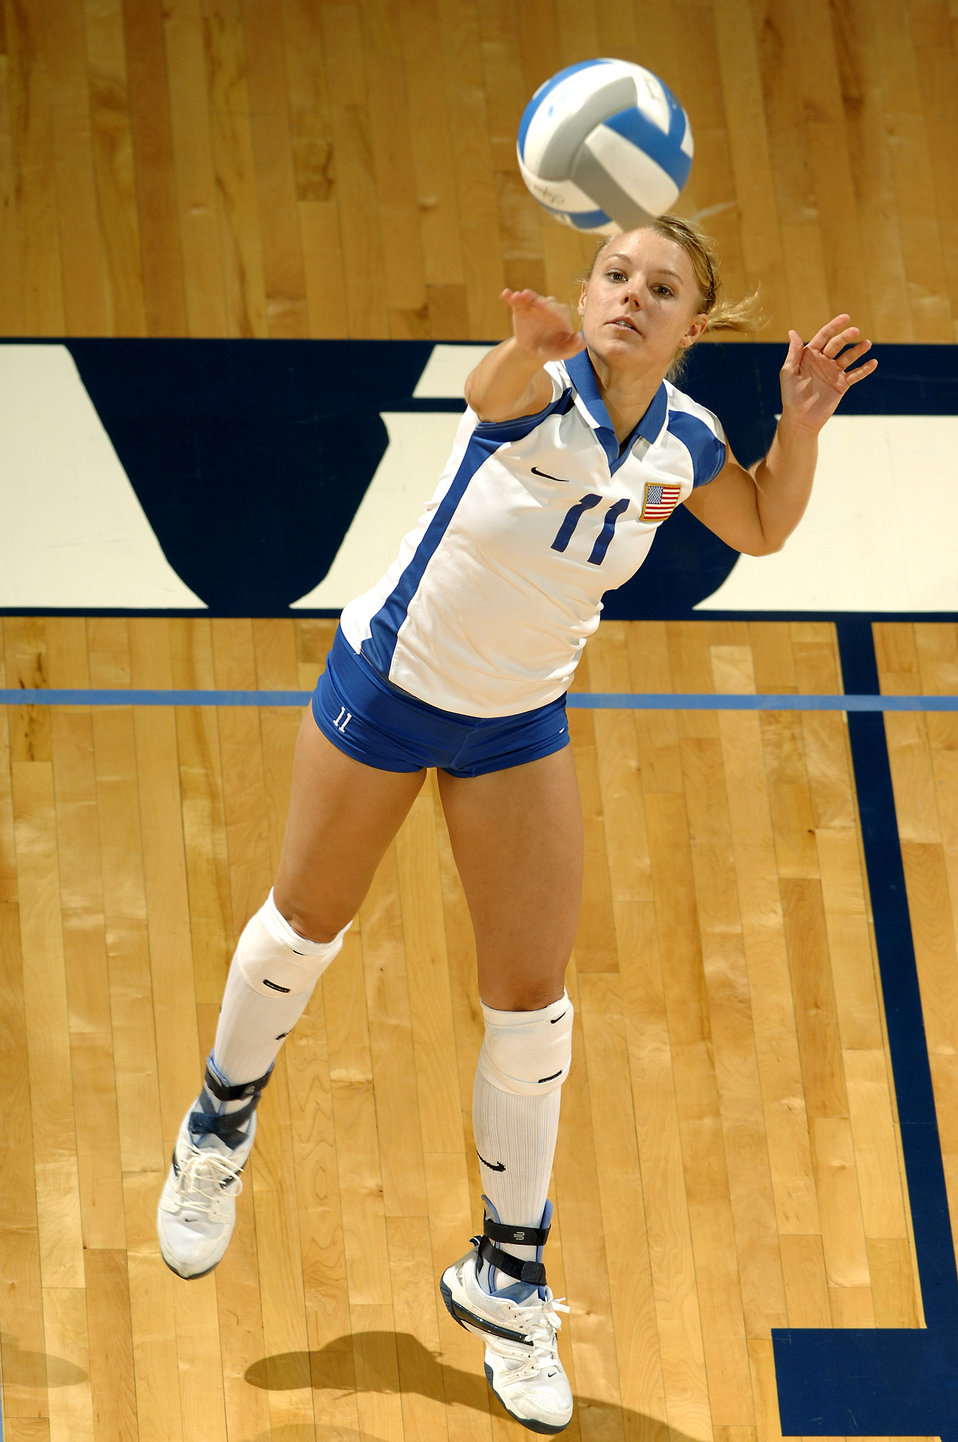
Volleyball: Falcons suffer tough losses

U.S. Air Force Academy senior Kim Kaballis serves against Brigham Young University as the Air Force volleyball team dropped a three-game decision to the 23rd-ranked Cougars Sept. 29 at the Academy's Clune Arena in Colorado. The Falcons return to the road to take on the San Diego State Aztecs Oct. 4 before heading to face the University of Nevada, Las Vegas Oct. 6.